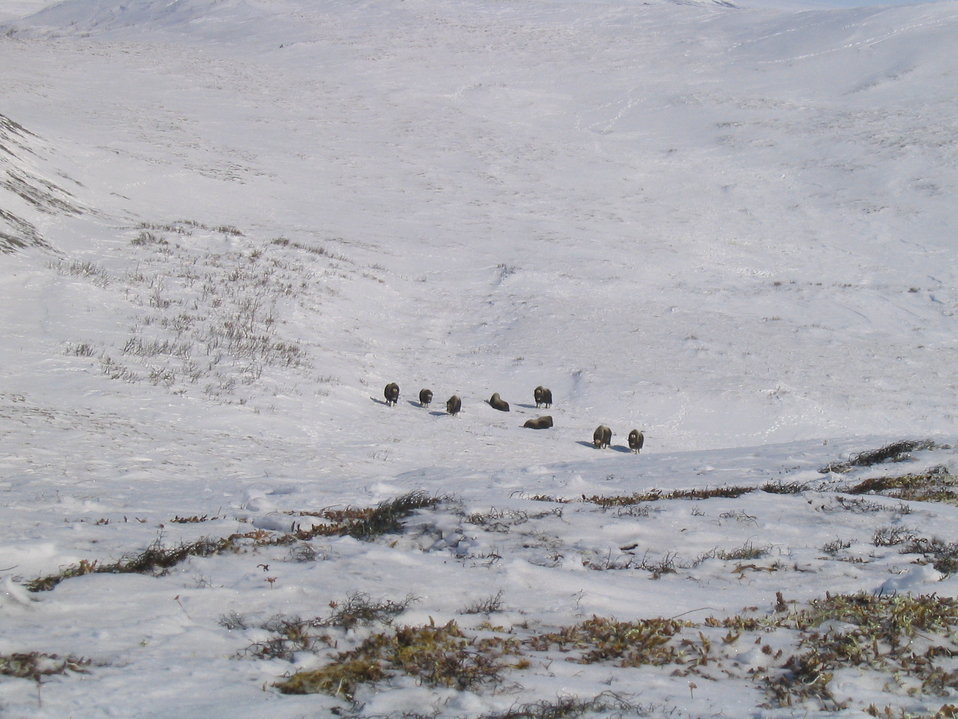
Muskox viewed during a Gyrfalcon survey

One of the great things about being at a field camp is the variety of wildlife species that can be viewed.

USFWS Yukon Delta NWR